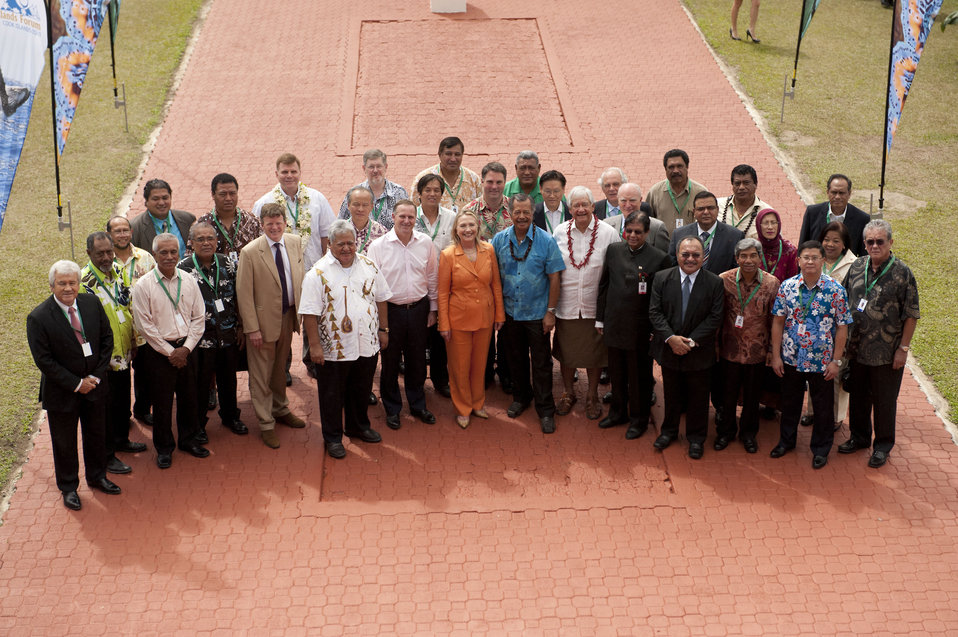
Secretary Clinton and Delegates to the Pacific Islands Forum

U.S. Secretary of State Hillary Rodham Clinton and delegates to the Pacific Islands Forum pose for a family photo at the Cook Islands National Auditorium, August 31, 2012.